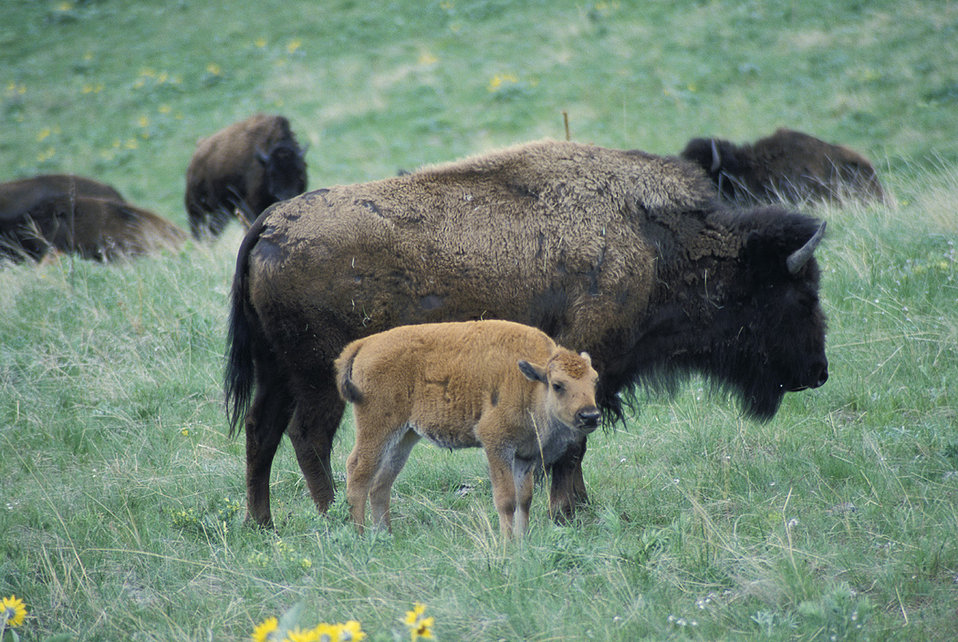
Bison cow and calf

Bison and calf